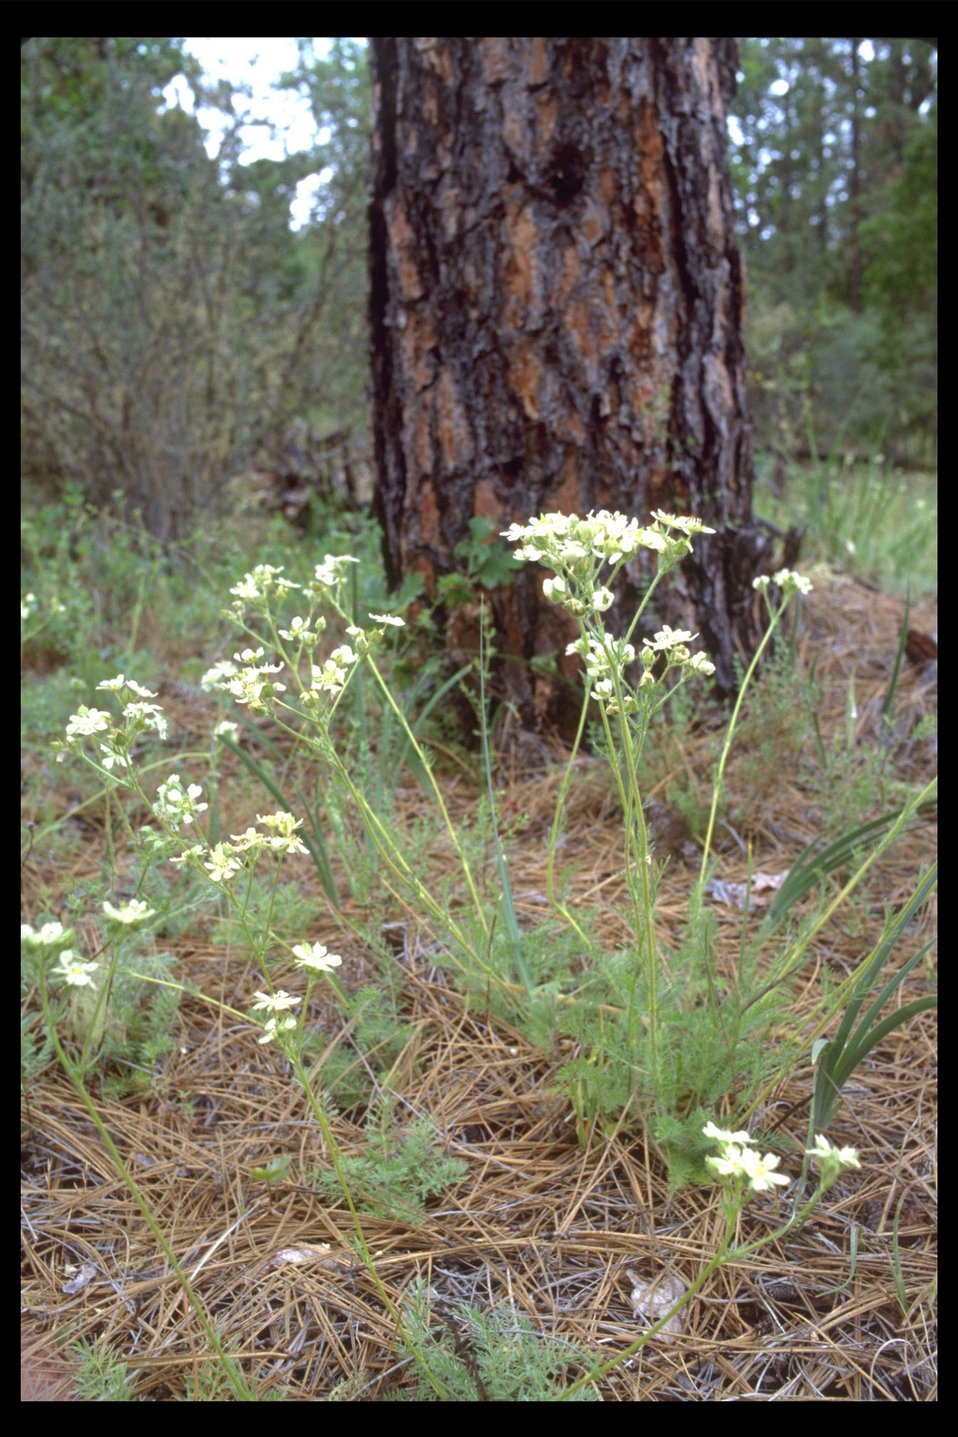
Dusky Horkeilia (Horkeilia fusca) at Trail, OR.